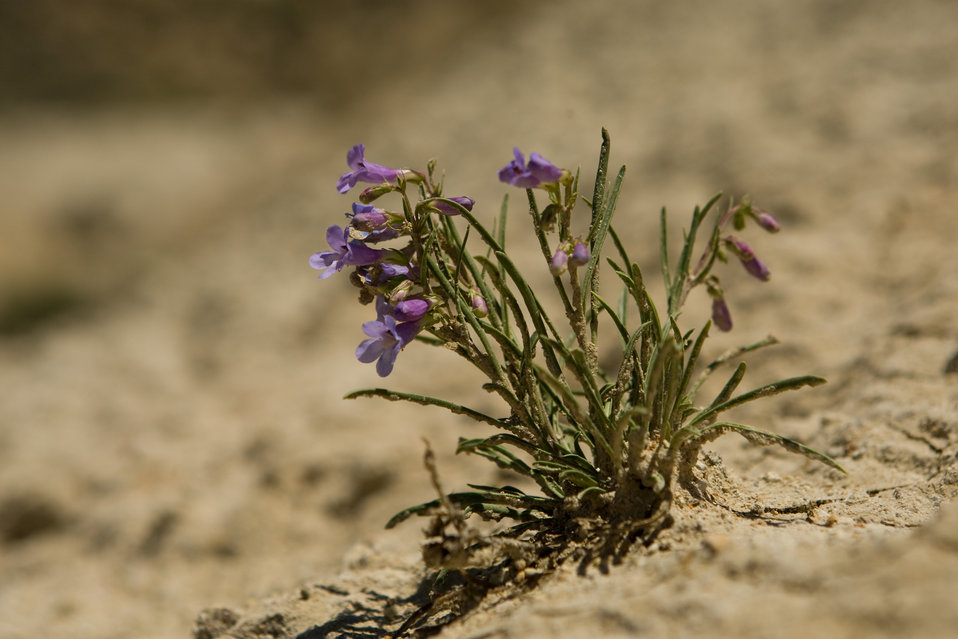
Colorado Rare Plant Conservation Initiative

The Colorado Rare Plant Conservation Initiative (RPCI) is a partnership of 23 statewide and regional agencies, private organizations, and academic institutions working to conserve 121 rare plants in Colorado. As part of these efforts the group developed the Colorado Rare Plant Conservation Strategy, developed Best Management Practices to reduce energy development impacts, addressed climate change, and developed focused strategies for the conservation of individual species at eight priority landscapes. The group has also worked to coordinate volunteer efforts for plant conservation across the state.